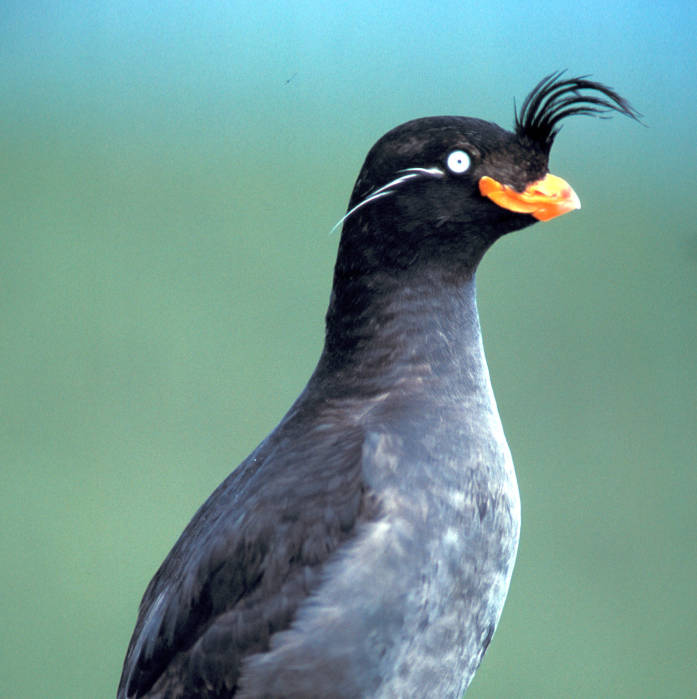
crested auklet

Alaska Maritime National Wildlife Refuge